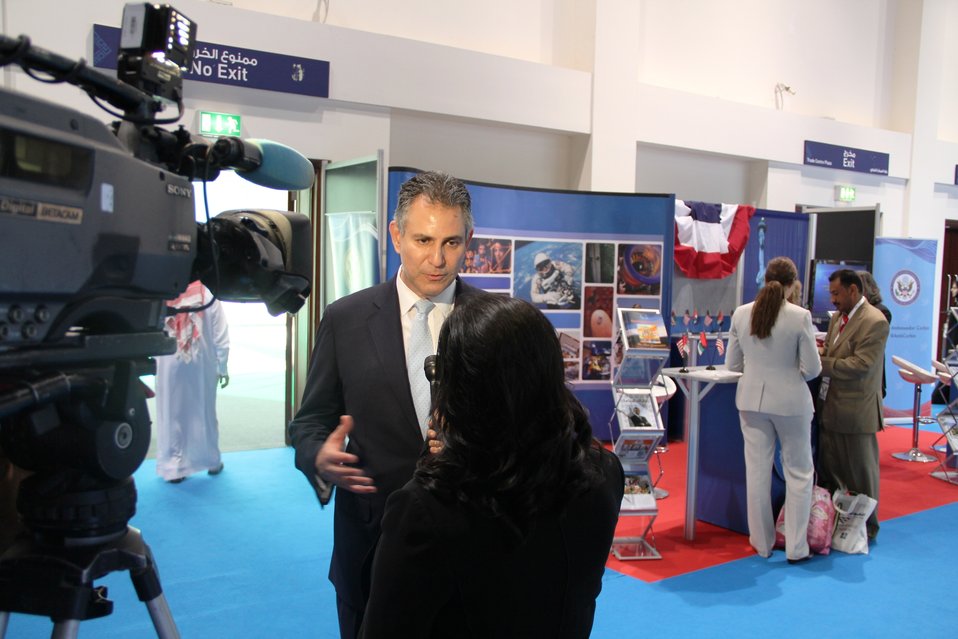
Under Secretary Sanchez Sanchez Is Interviewed

Under Secretary of Commerce for International Trade Francisco J. Sanchez is interviewed at the U.S. Embassy booth at the Global Entrepreneurship Summit (GES) in Dubai, United Arab Emirates, December 11, 2012.